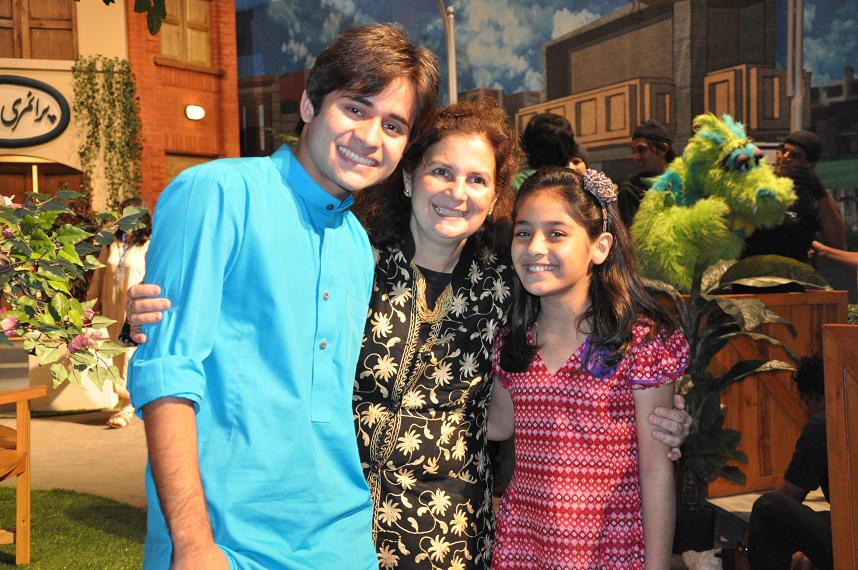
U.S. Consul General Nina Fite with kids.